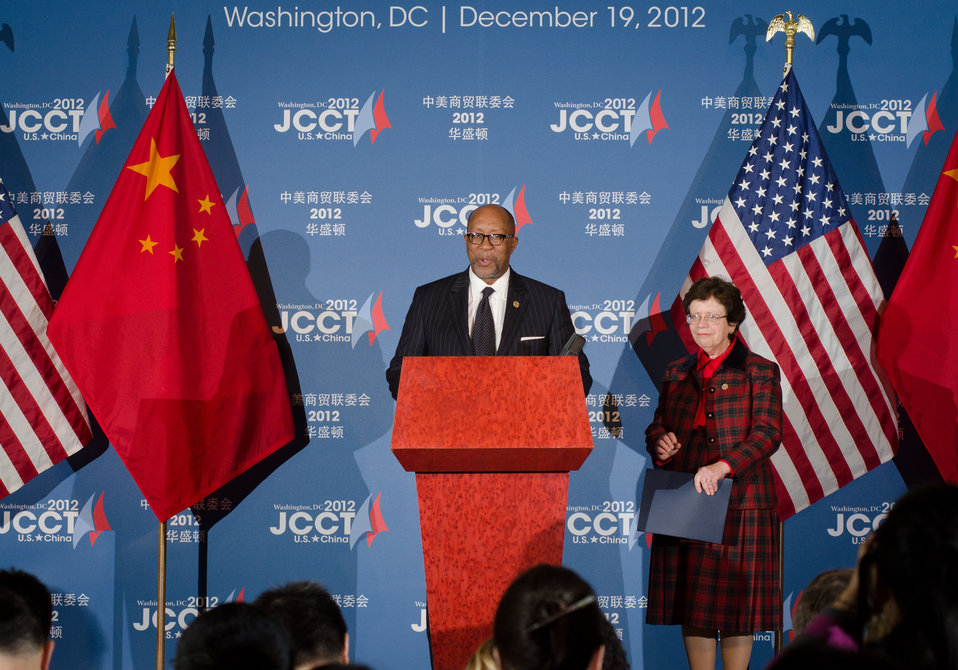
U.S. Trade Representative Ron Kirk, left, and Acting U. S. Commerce Secretary Rebecca Blank listen and respond to questions from international news media journalists, at the 23rd Session of the U.S. China Joint Commission on Commerce and Trade (JCCT) at the Andrew W. Mellon Auditorium in Washington, D.C. on Wednesday, Dec. 19, 2012. The JCCT holds high-level plenary meetings on an annual basis to review progress made by working groups that focus on a wide variety of trade issues. These working groups meet throughout the year to address topics such as intellectual property rights, agriculture, pharmaceuticals and medical devices, information technology, tourism, commercial law, environment, and statistics.